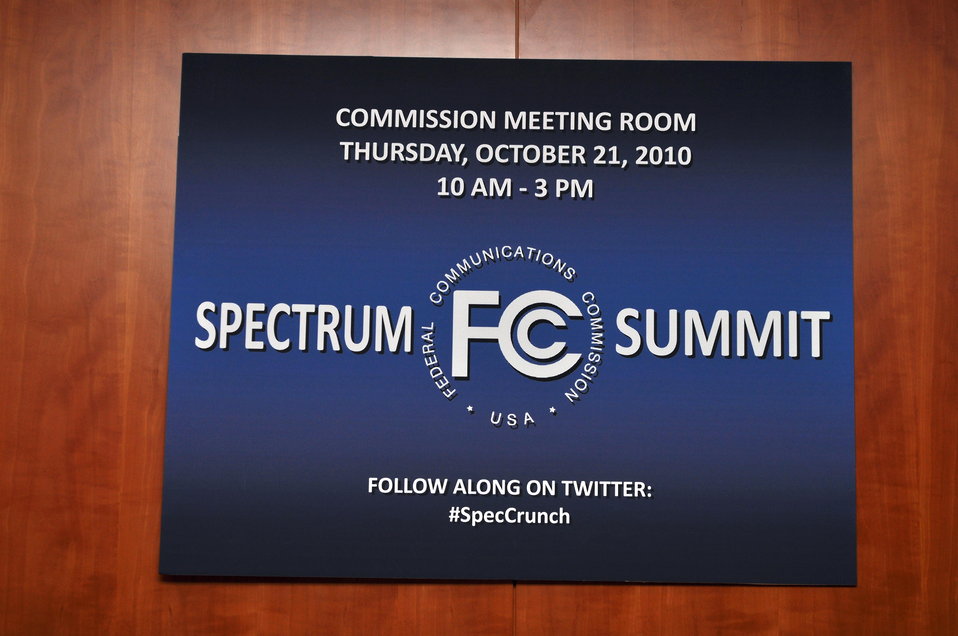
Spectrum Summit